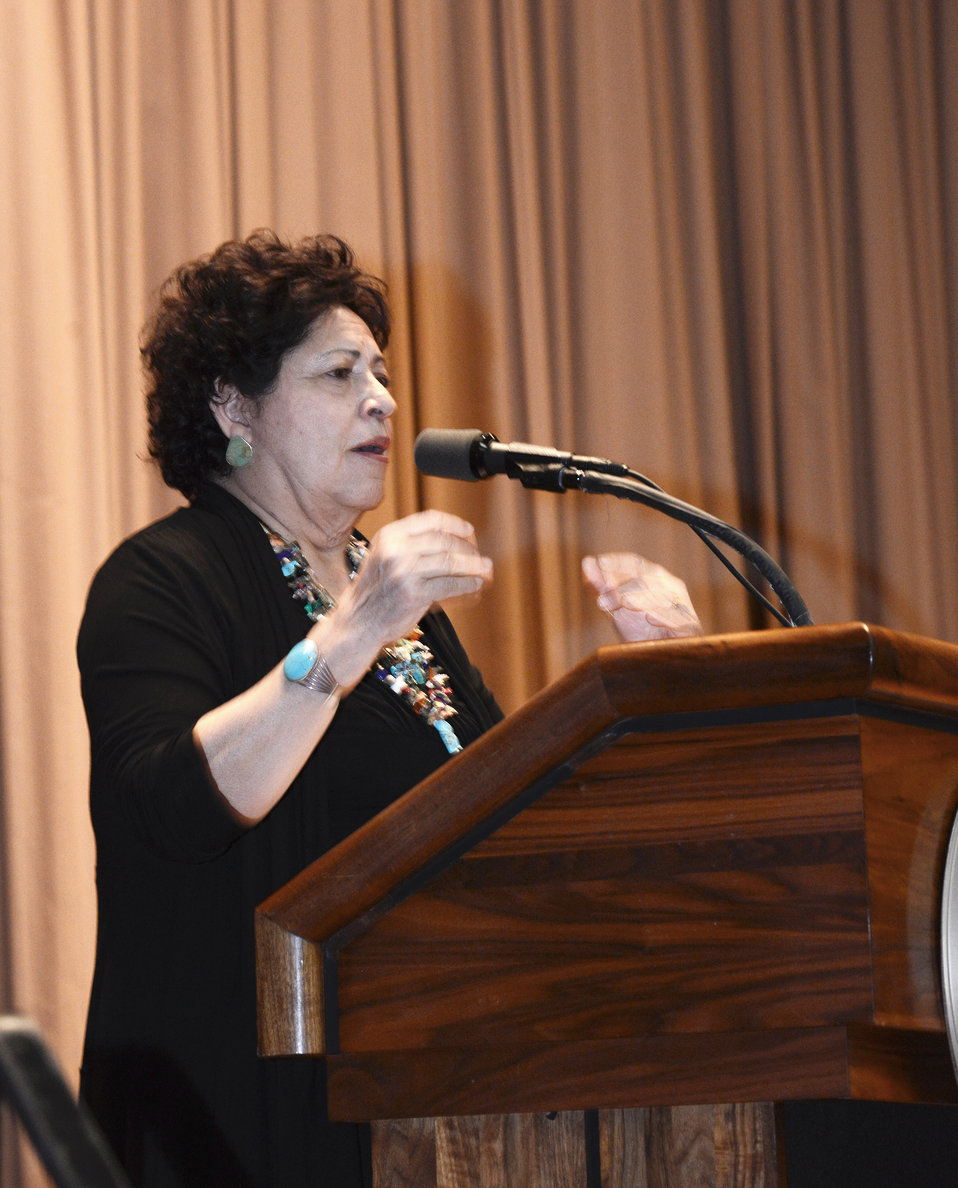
U.S. Office of Personnel (OPM) Director Katherine Archuleta speaks at the U.S. Department of Agriculture’s (USDA) Women’s History Month Observance in the Jefferson Auditorium at USDA on Thursday, Mar. 13, 2014. The theme for this year’s observance is “Celebrating Women of Character, Courage, and Commitment”.